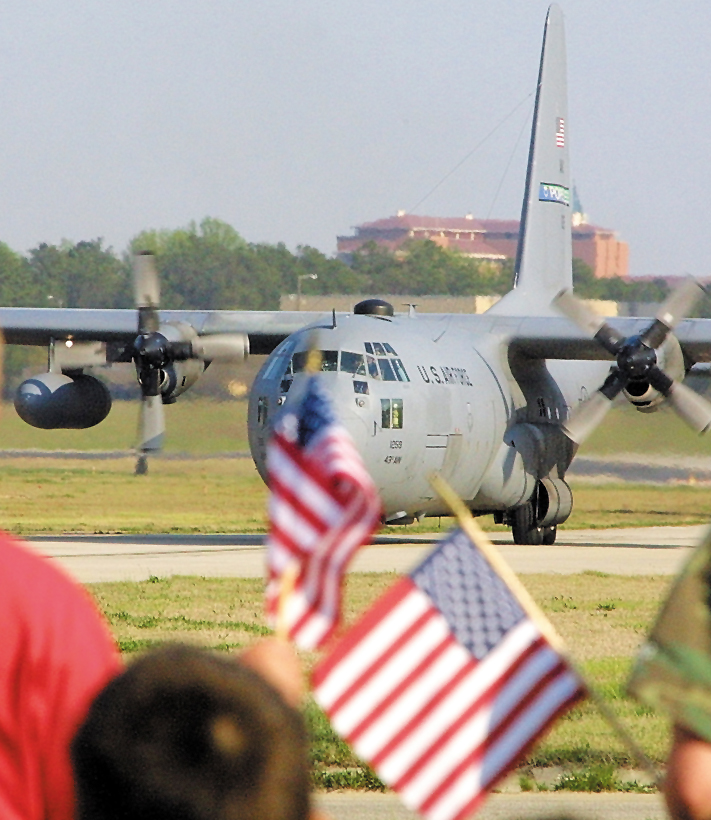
Happy homecoming

POPE AIR FORCE BASE, N.C. -- Children wave American flags as aircraft carrying Airmen from the 41st Airlift Squadron, 43rd Aircraft Maintenance Squadron and 2nd AS taxi here April 19. The Airmen were greeted by cheering family members, friends and fellow servicemembers welcoming their loved ones back to the United States from a three-month deployment in Southwest Asia.